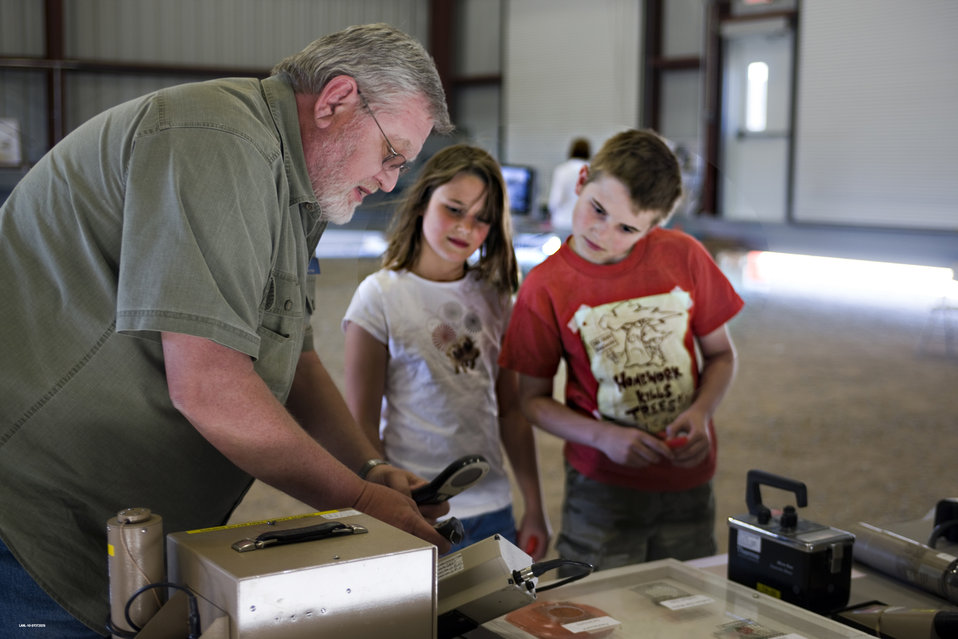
Material Disposal Area B Open House

An open house held earlier this year inside one of the enclosures on Material Disposal Area B (MDA-B) at Los Alamos National Laboratory gave visitors the opportunity to receive information about the project and ask questions. Displays included the remote control excavator and emergency alert siren. Subject matter experts on MDA-B history, air quality monitoring, and radiological protection, were on hand. Radiation Protection Manager Marty Peifer, pictured here, far left, shows children some equipment, including radiological protection gear.